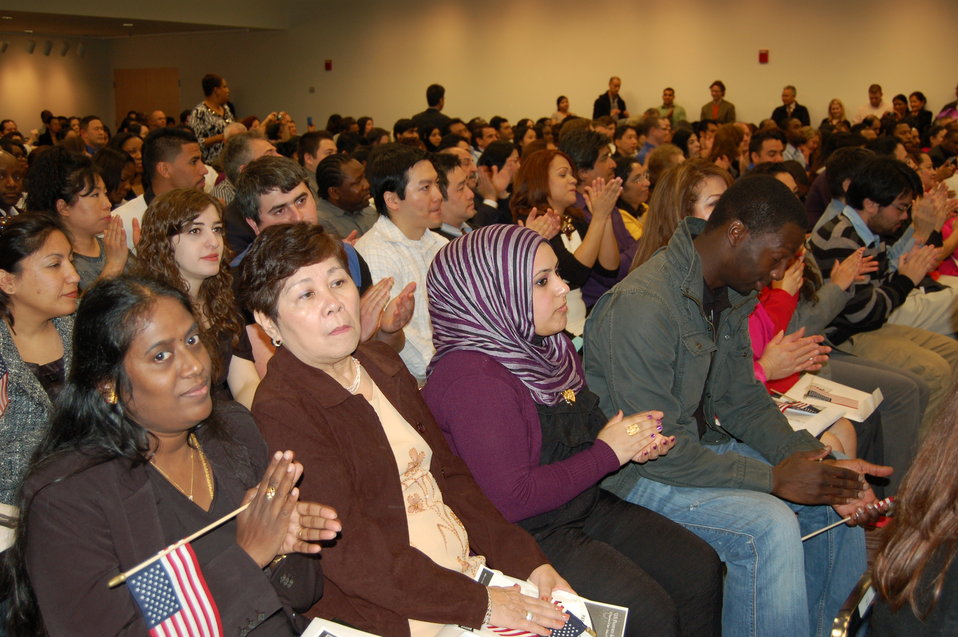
Naturalization Ceremony